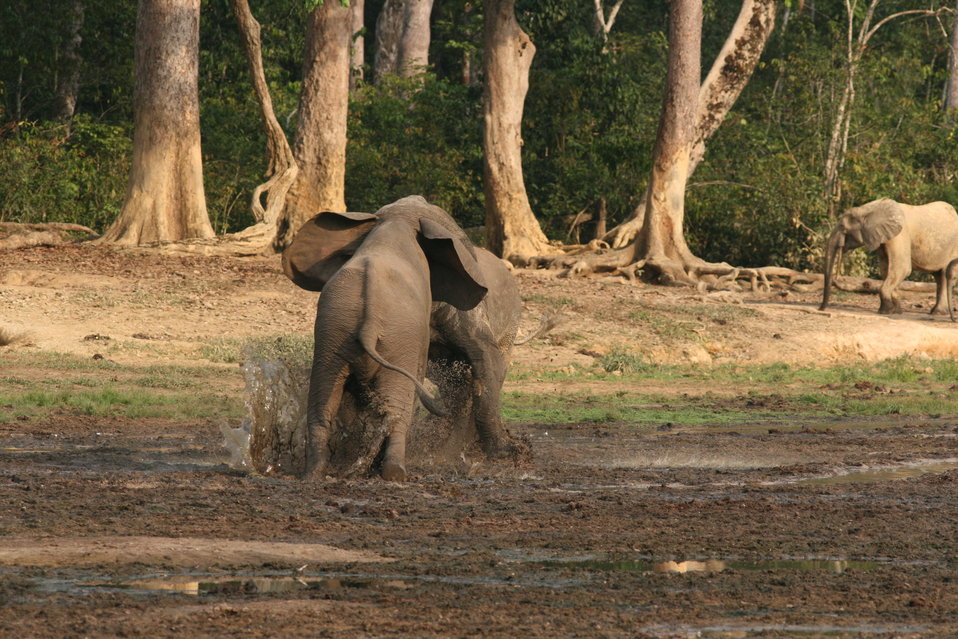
Forest elephant group 7

Elephant males throughout their lives challenge one another to establish dominance.